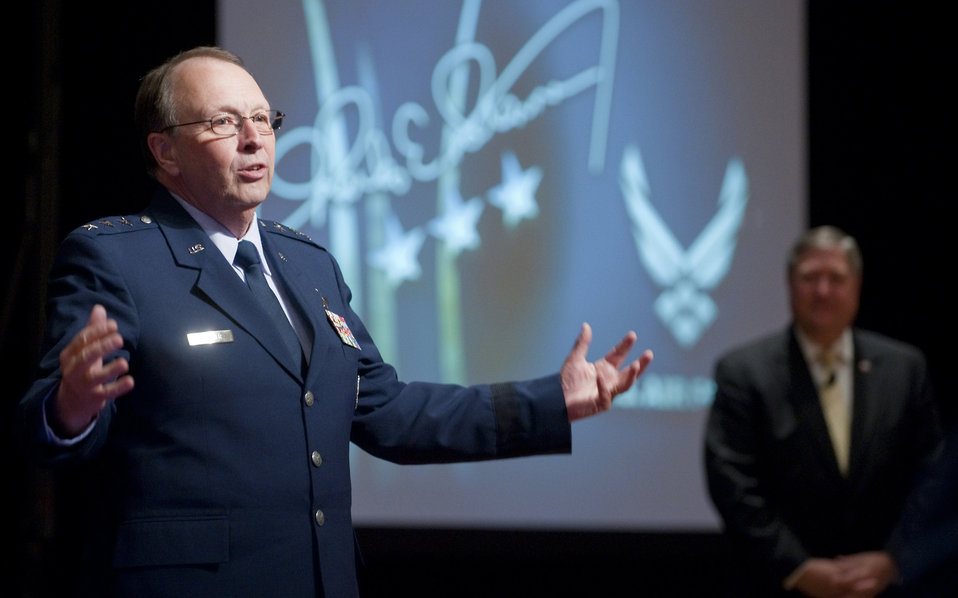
Air Force Reserve Command Senior Leader Conference

Chief of the Air Force Reserve and Air Force Reserve Command Commander Lt. Gen. Charles Stenner (left) introduces Secretary of the Air Force Michael Donley (right) who gave the keynote address during the Air Force Reserve Command Senior Leaders Annual Conference on May 16, 2011, in Washington, D.C.